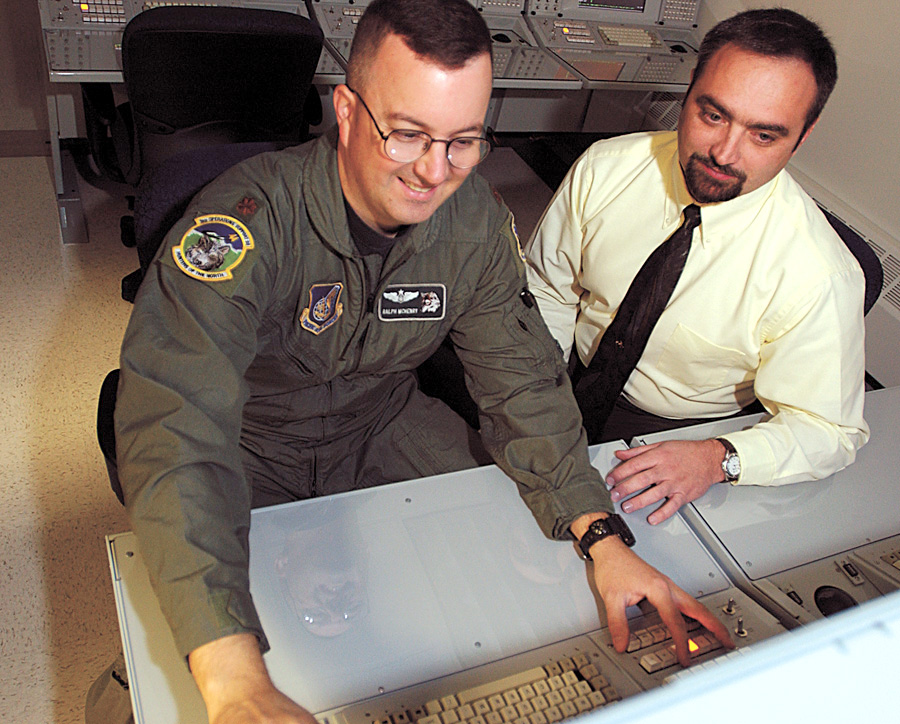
Simulator

ELMENDORF AIR FORCE BASE, Alaska (AFPN) -- Simulator instructor Mark Zech (right) gives Maj. Ralph McHenry tips on the airborne warning and control system mission crew commander's console in the new mission training center here. McHenry is assigned to the base's 3rd Operations Support Squadron.